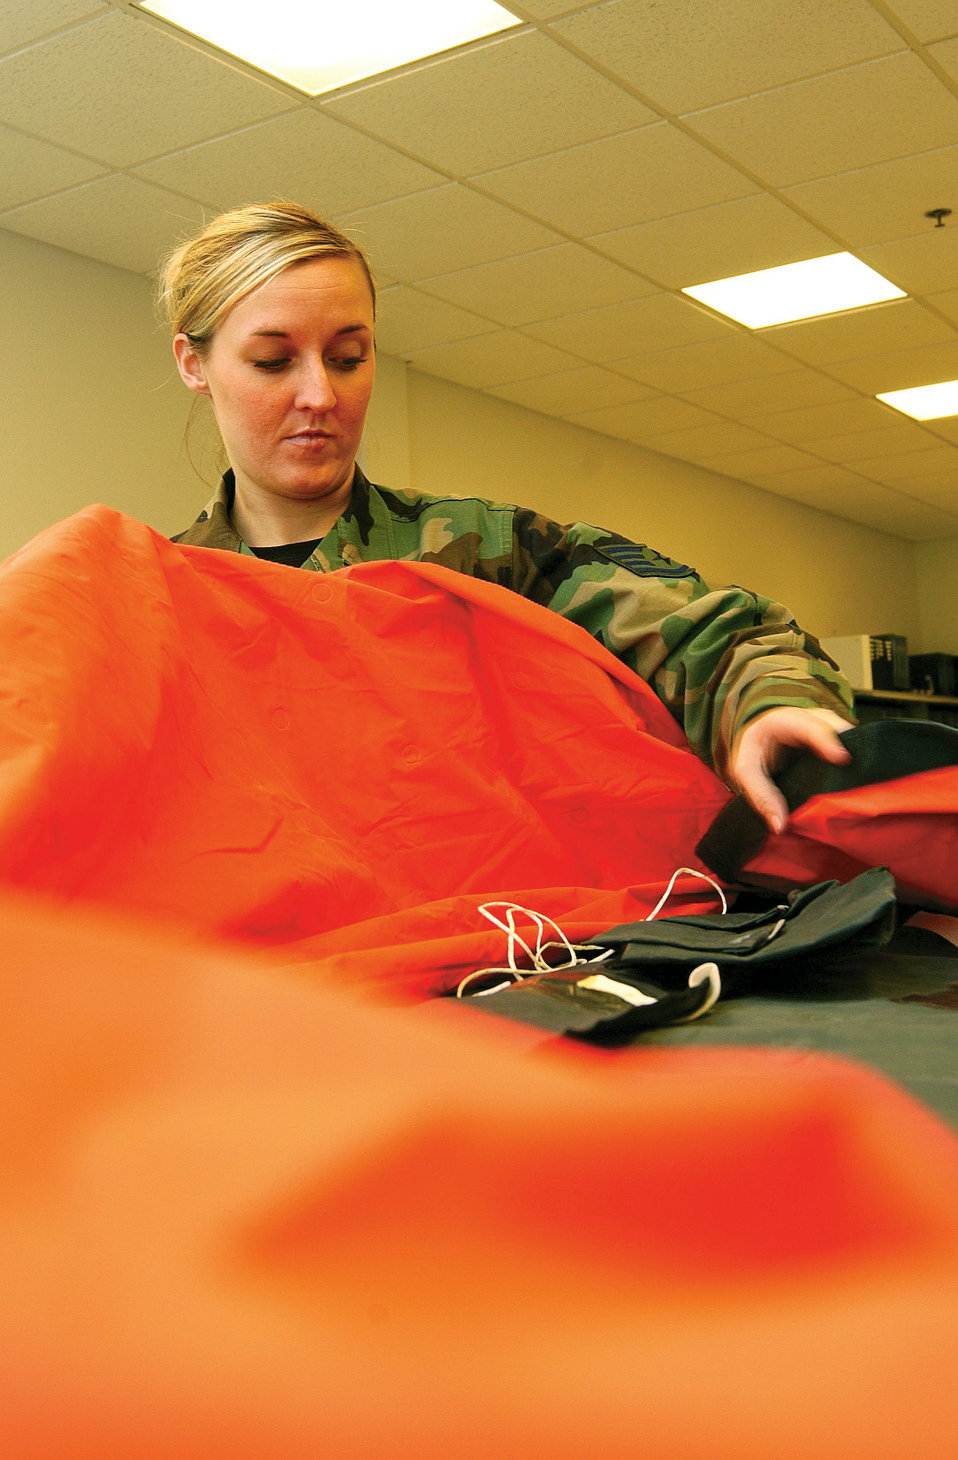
Survival kits

MCCHORD AIR FORCE BASE, Wash. -- Staff Sgt. Lisa Ebeling folds a one-man life raft to be placed in a survival kit here recently. Sergeant Ebeling is an aircrew life support technician assigned to the 62nd Operation Support Squadron.